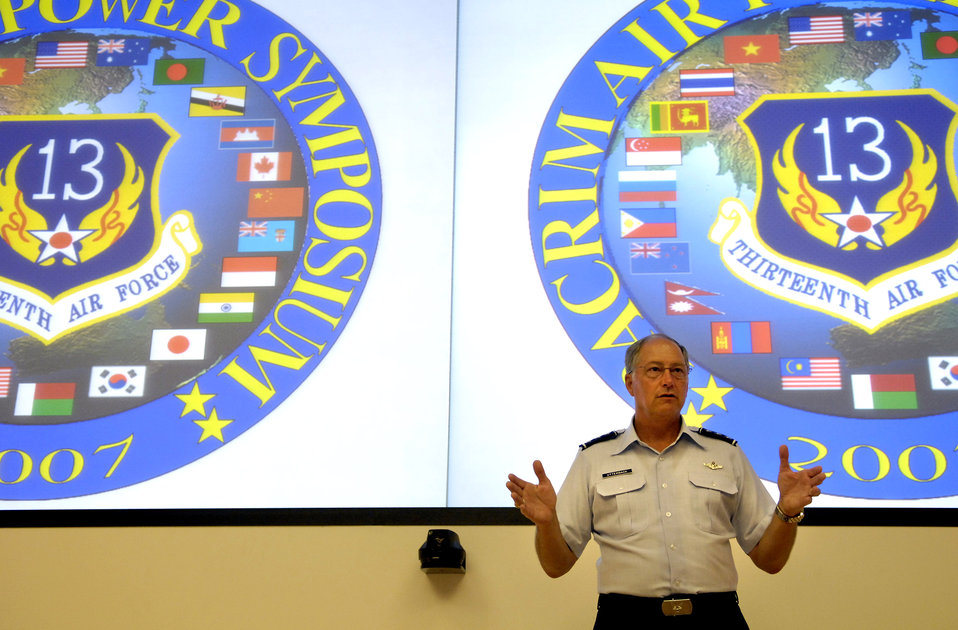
Pacific Rim Airpower Symposium provides forum

Lt. Gen. Loyd S.